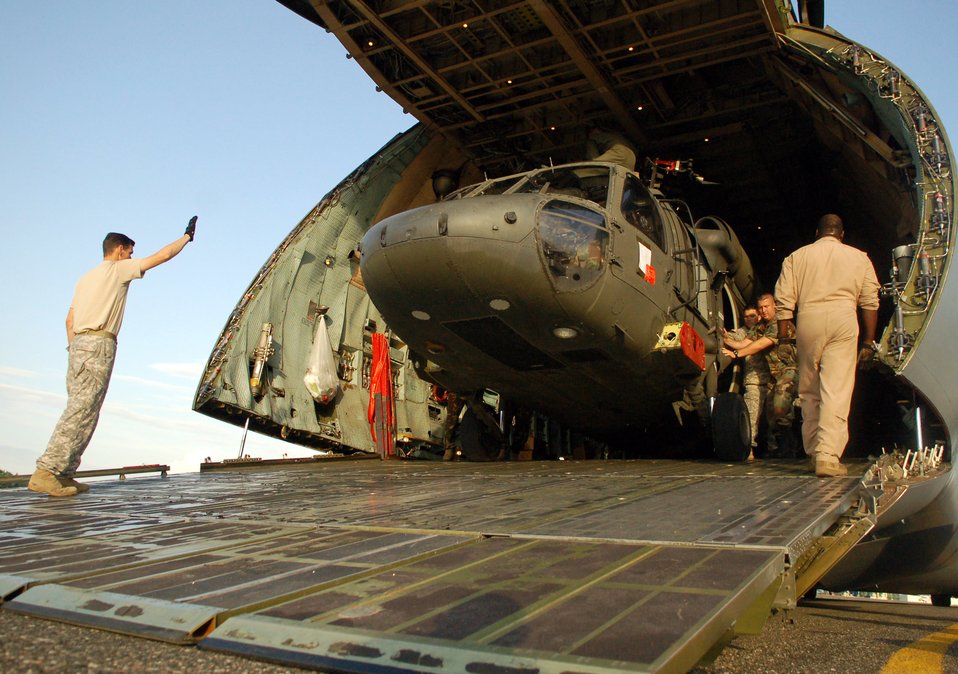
Medical mission becomes primary focus following Noel

The first of two Army UH-60 Blackhawk helicopters is unloaded Nov. 8 from an C-5 Galaxy on the flightline at San Isidro Air Base, Dominican Republic, in preparation for medical relief missions following Tropical Storm Noel. Servicemembers deployed from Joint Task Force-Bravo at Soto Cano Air Base, Honduras, to assist the Dominican Republic after it was ravaged are now refocusing efforts from search and rescue to helping the sick and injured.